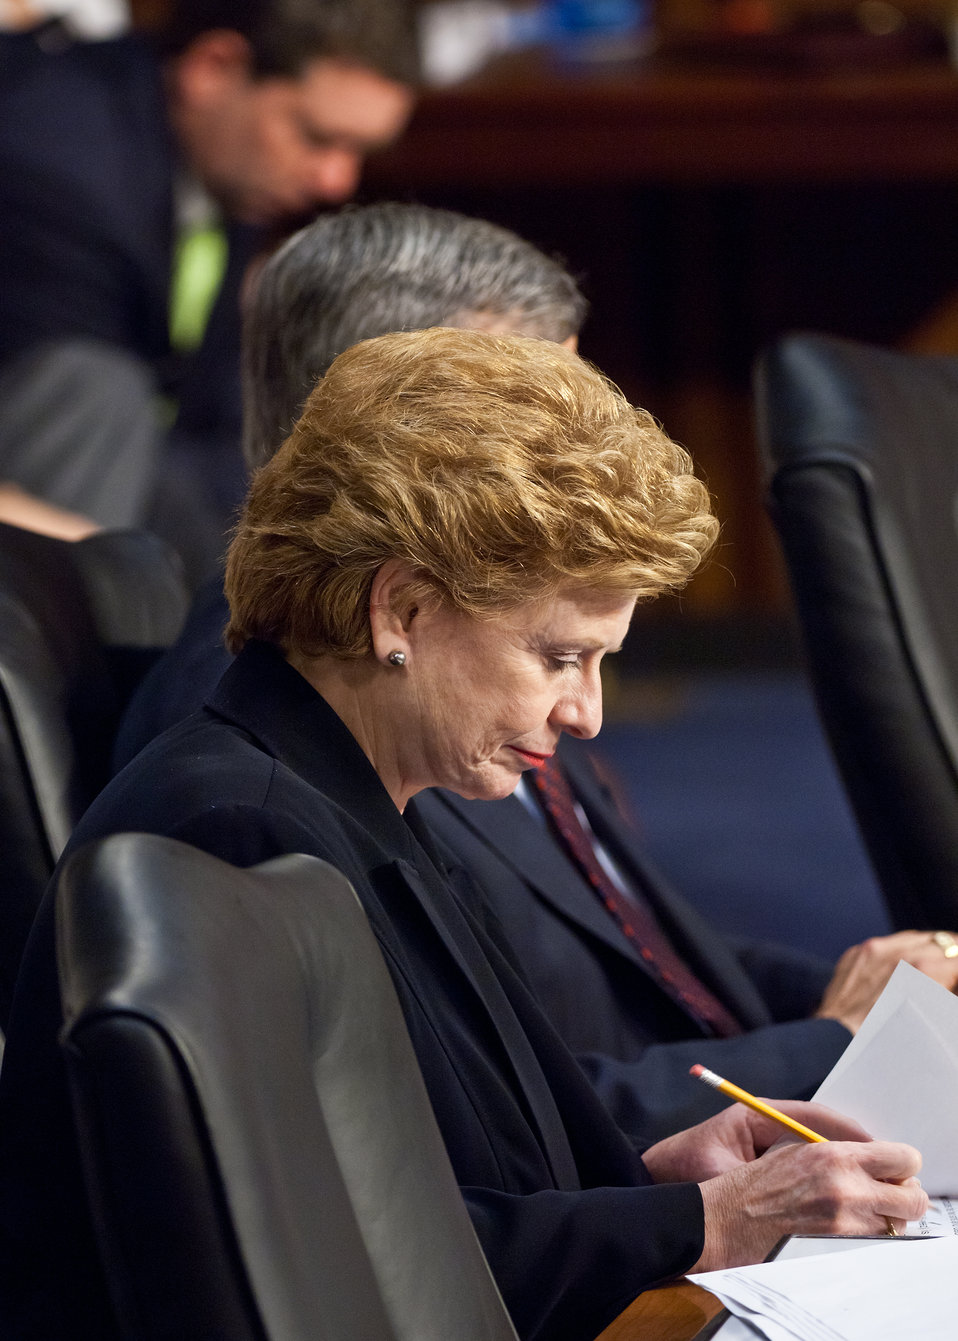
Senator Debbie Stabenow, Chairwoman of the U.S. Senate Committee on Agriculture, Nutrition and Forestry makes notes during a hearing with Agriculture Secretary Tom Vilsack on the next Farm Bill in Washington, DC, Thursday, May 26, 2011. Chairwoman Stabenow highlighted the strides Agriculture has made in the past several decades noting that the average American farmer feeds an estimated 150 people.